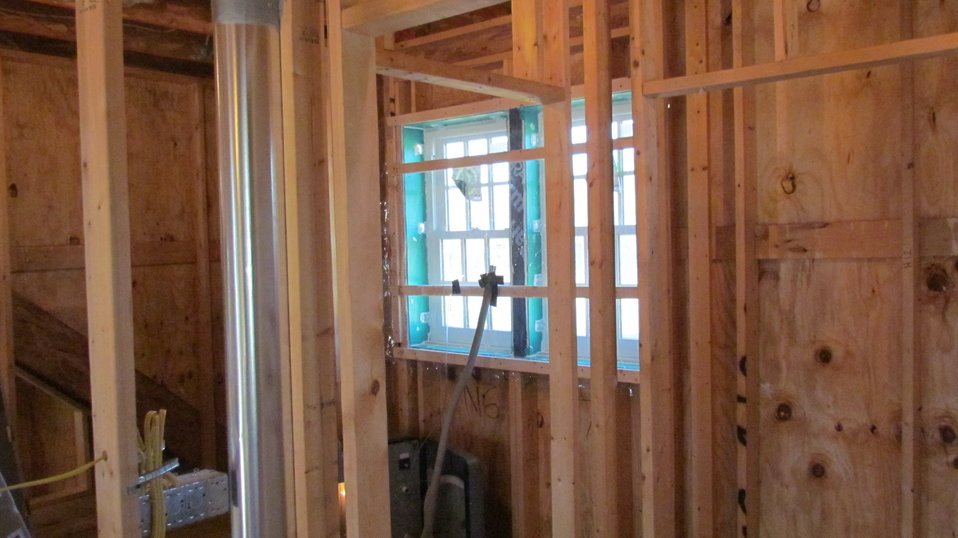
Window testing taking place to ensure that windows are water tight and the air infiltration through the windows is minimal.